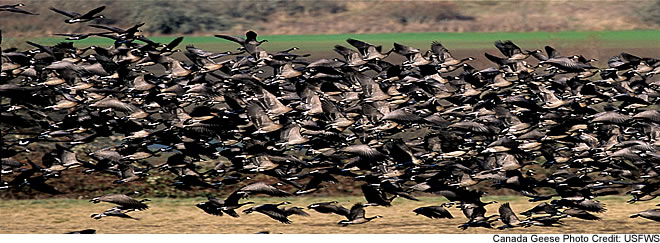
Canada Geese

A flock of Canadian Geese is seen at the Ankeny National Wildlife Refuge in the fertile Willamette Valley of Northern Oregon.